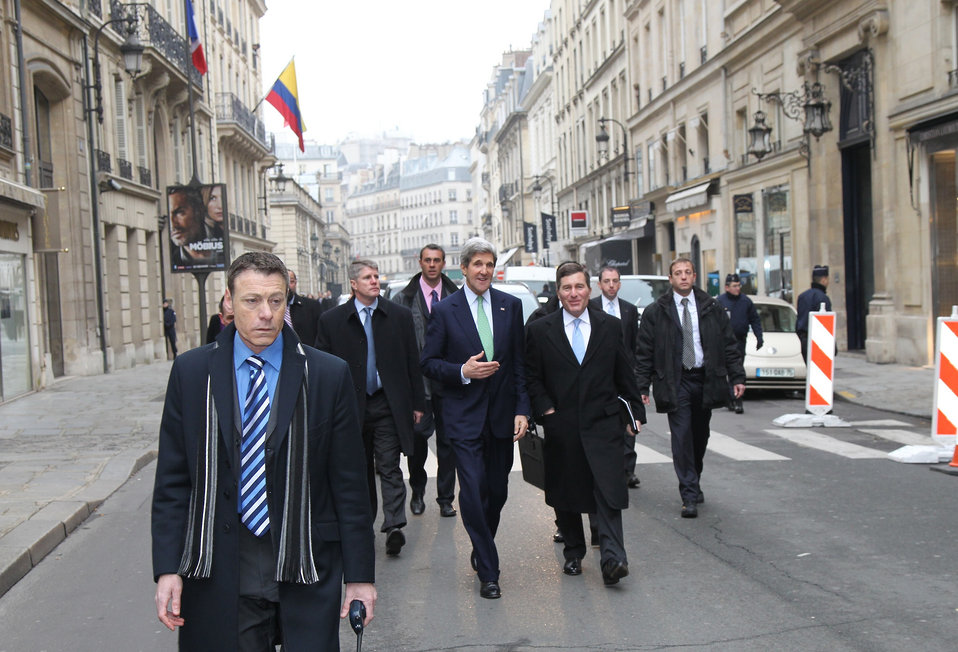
Secretary Kerry Walks on Faubourg St-Honore Street

U.S. Secretary of State John Kerry walks from Elysee Palace to the Chief of Mission Residence with U.S. Ambassador to France Charles Rivkin in Paris, France, on February 27, 2013.